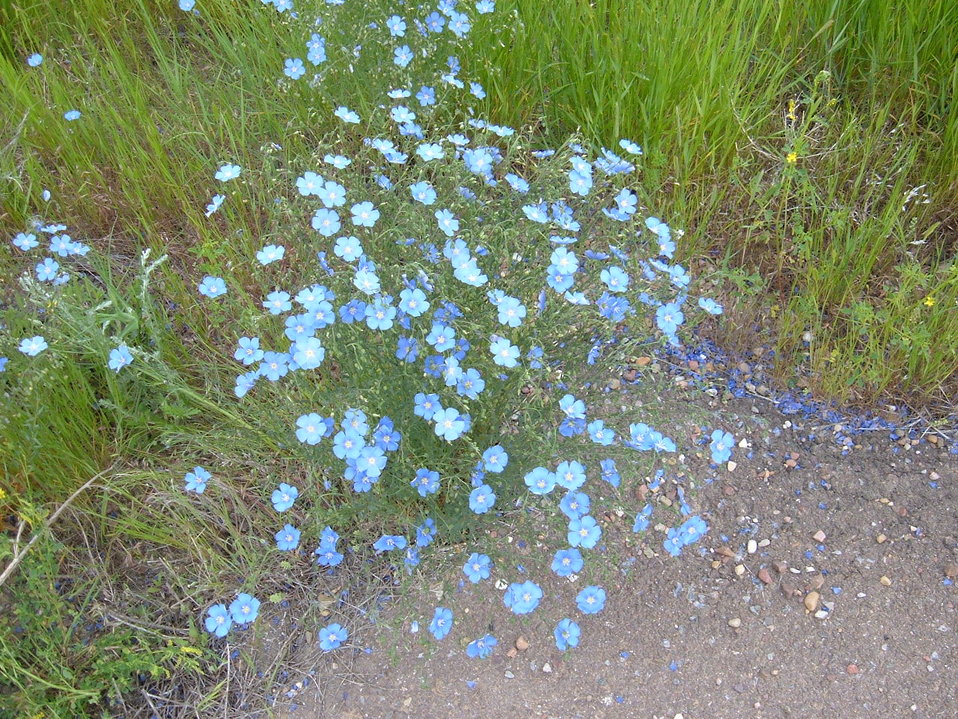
Blue Flax

This brightly colored beautiful flower covers the refuge roadsides in the Spring. (Linium lewisii)